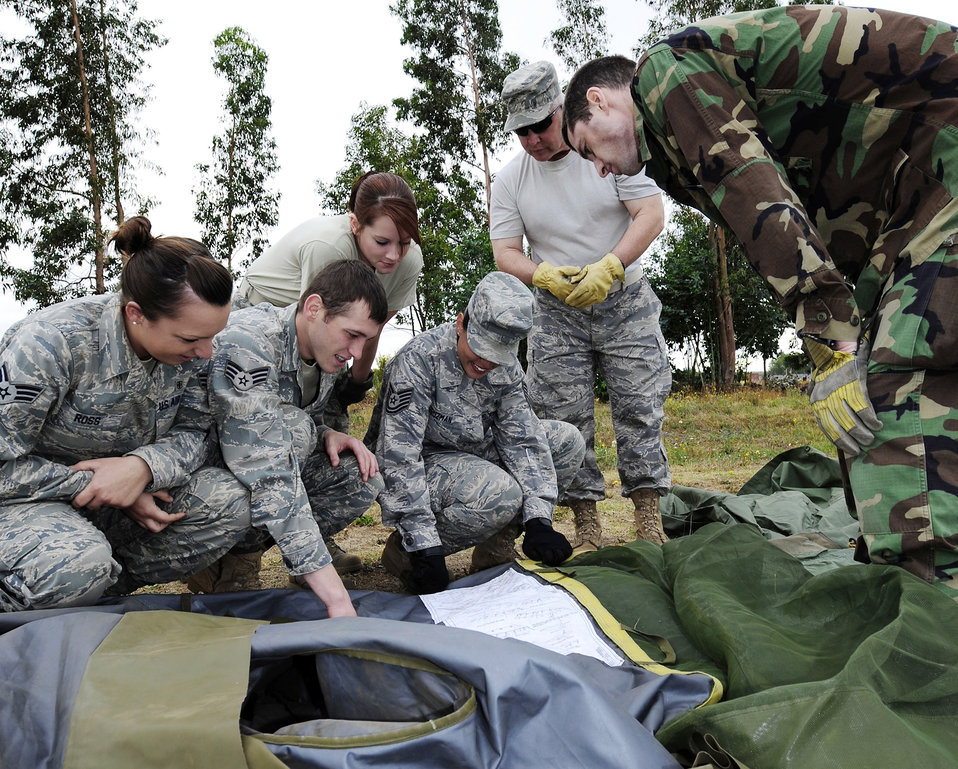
Airmen build EMEDs tents

Airmen look over instructions for building an additional tent at the expeditionary hospital March 23, 2010, in Angol, Chile. At the request of local medical officials, Airmen from an Air Force Expeditionary Medical Support team and Chilean army members are expanding the mobile hospital to better meet the medical needs of the population surrounding Angol.